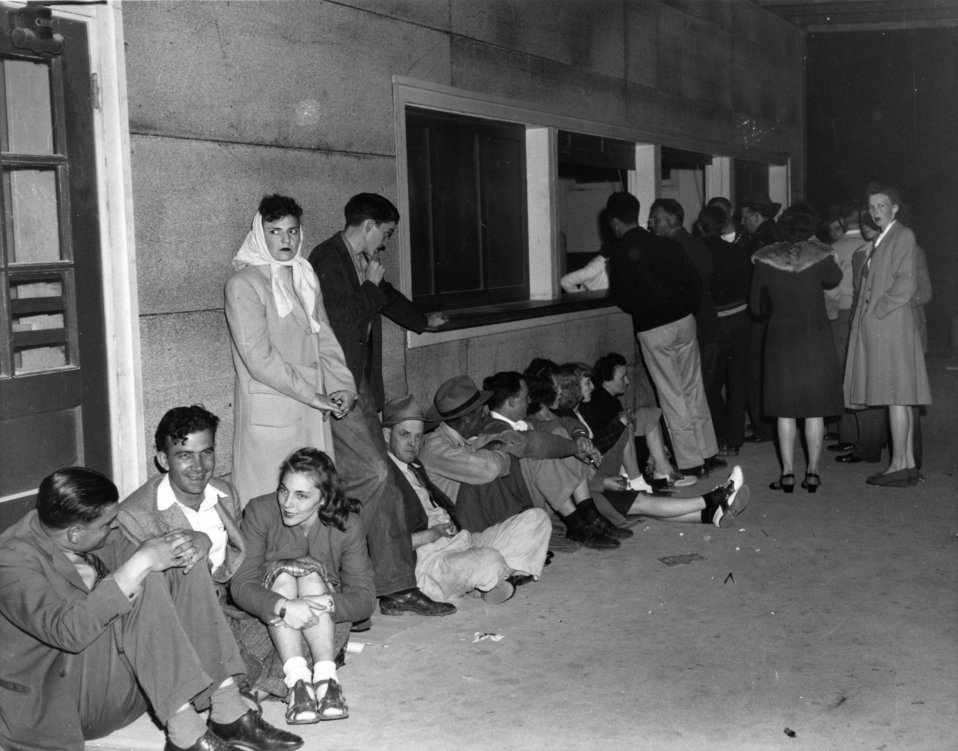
Daily Life at Oak Ridge